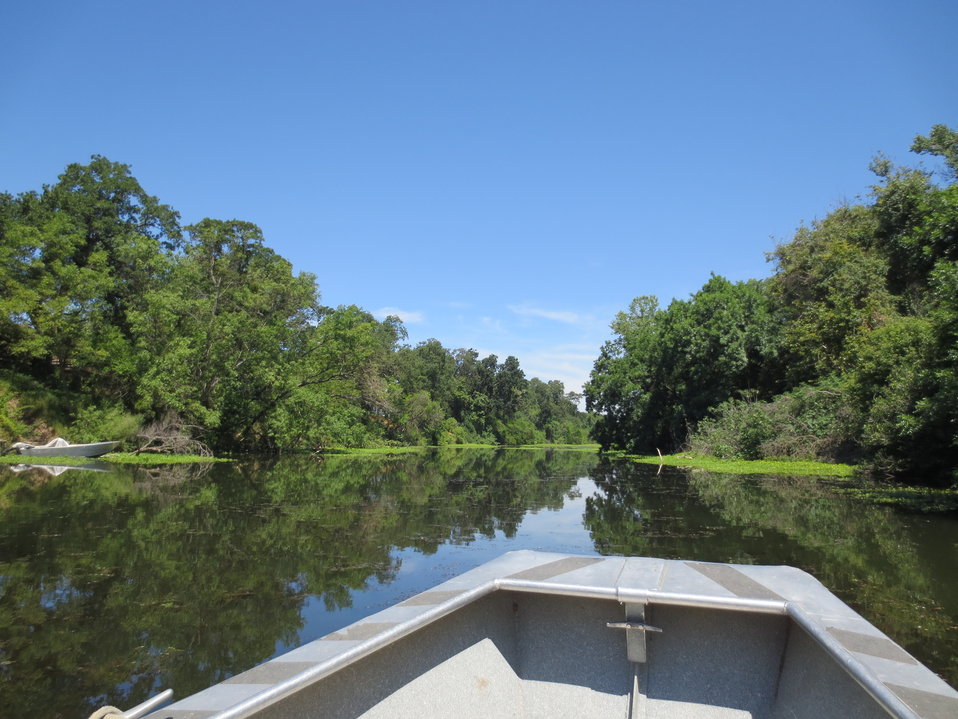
Sacramento River

Little of the Sacramento River’s native riverside riparian or forests habitats remained due to development and agriculture but the Sacramento River NWR manages 29 units to restore native plants and wildlife back to the area.